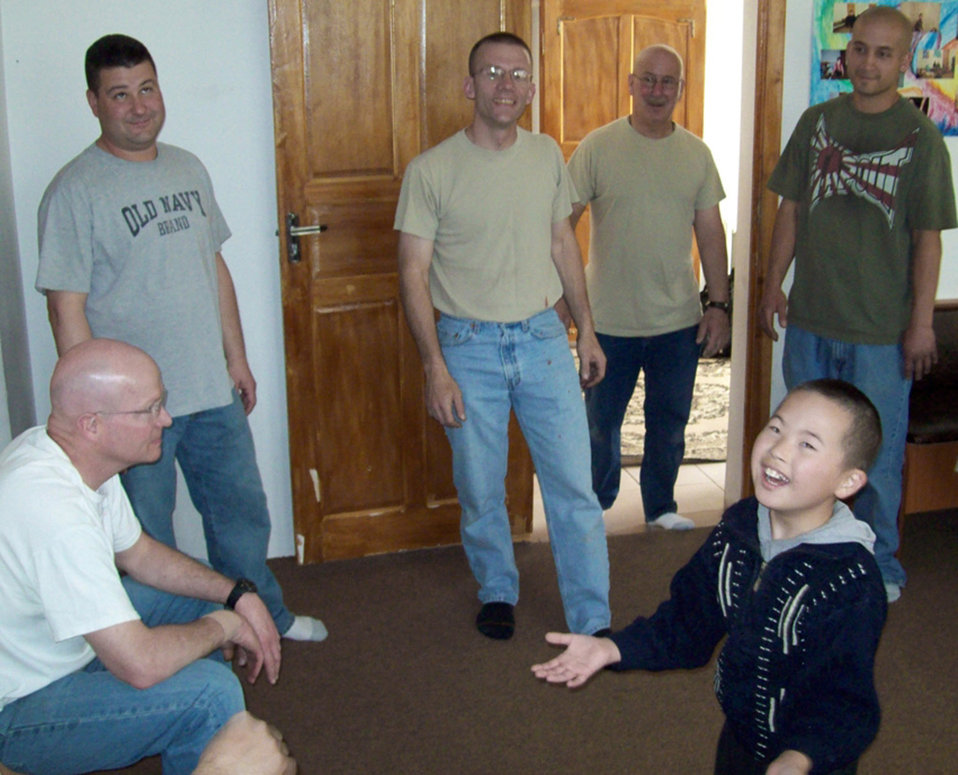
Airmen take heed for those in need

Airmen from the 376th Air Expeditionary Wing are invited for chi tea and cookies and to play with the children after they finished painting playground equipment and installing a new stove for Umut-Nadjeshda Children's Rehabilitation Center May 9 in Bishkek, Kyrgyzstan. The Airmen are deployed to nearby Manas Air Base and volunteer to help out at the center. The center is home to about 60 children and teenagers, aged between 2 to 21 years old.